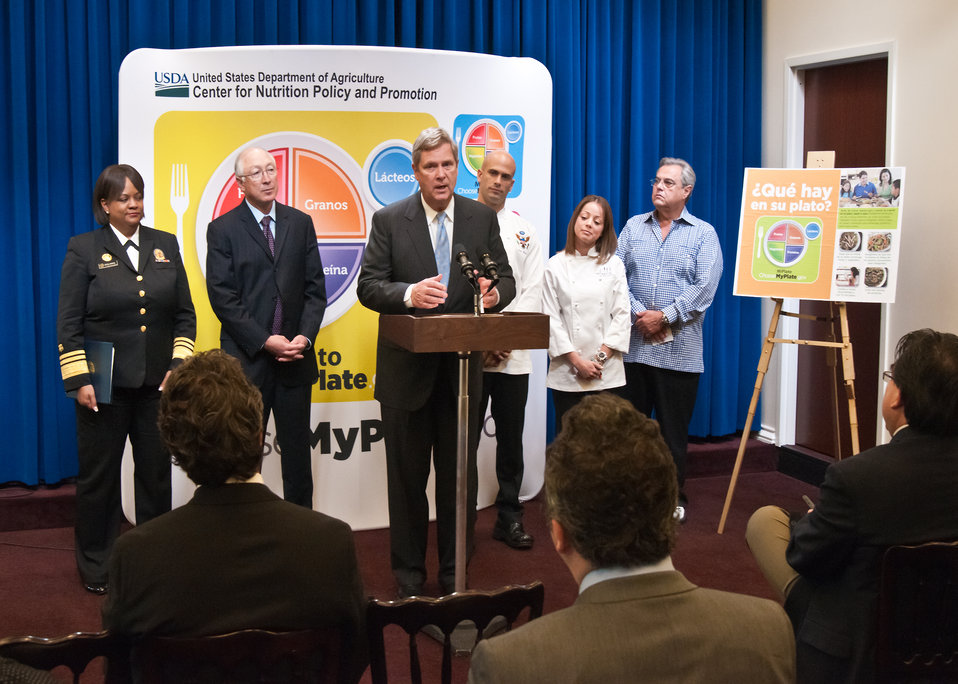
From left: Surgeon General Regina Benjamin, Interior Secretary Ken Salazar, Agriculture Secretary Tom Vilsack, White House Chef Sam Kass, Chef Marcella Valladolid and Chef Pepín highlighted the federal government's new food icon, MiPlato that will help serve as a reminder to help Hispanic consumers make healthier food choices as Part of the Hispanic Heritage Month Celebration. The event was held in the Eisenhower Executive Office Building in Washington, DC, Friday, September 30, 2011. Earlier this year, USDA unveiled MyPlate as a new generation icon with the intent to prompt consumers to think about building a healthy plate at meal times and to seek more information to help them do that by going to www.ChooseMyPlate.gov. The new MiPlato and MyPlate icons emphasize the fruit, vegetable, grains, protein and dairy food groups. The announcement is part of the Obama Administration’s celebration of Hispanic Heritage Month, which this year carries the theme “Renewing the American Dream,” and this week focuses on the community’s well being. The tips are part of a multi-year effort to raise awareness and educate consumers of every age on the importance of healthier eating and physical activity.